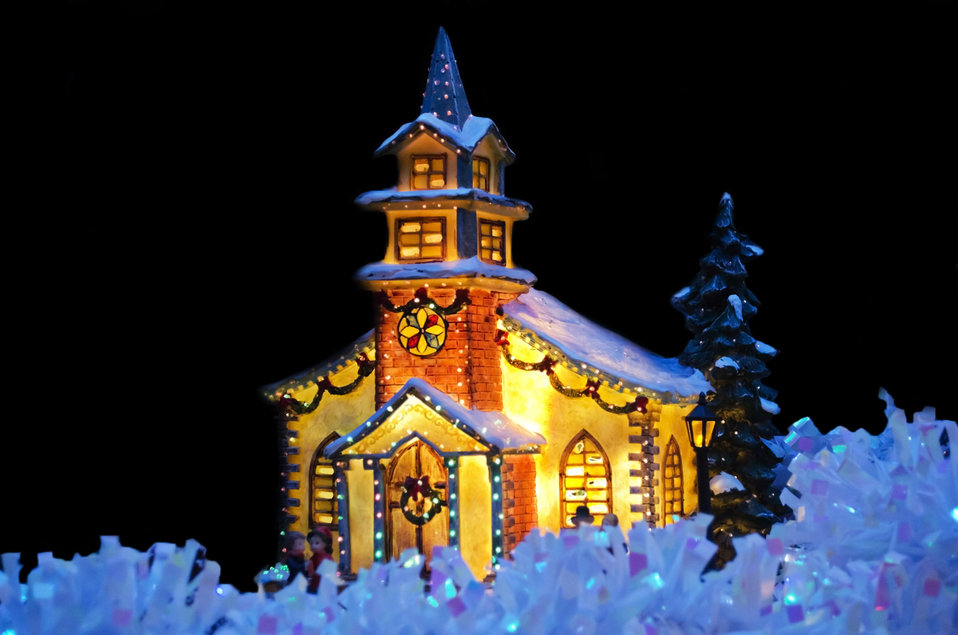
Christmas church.